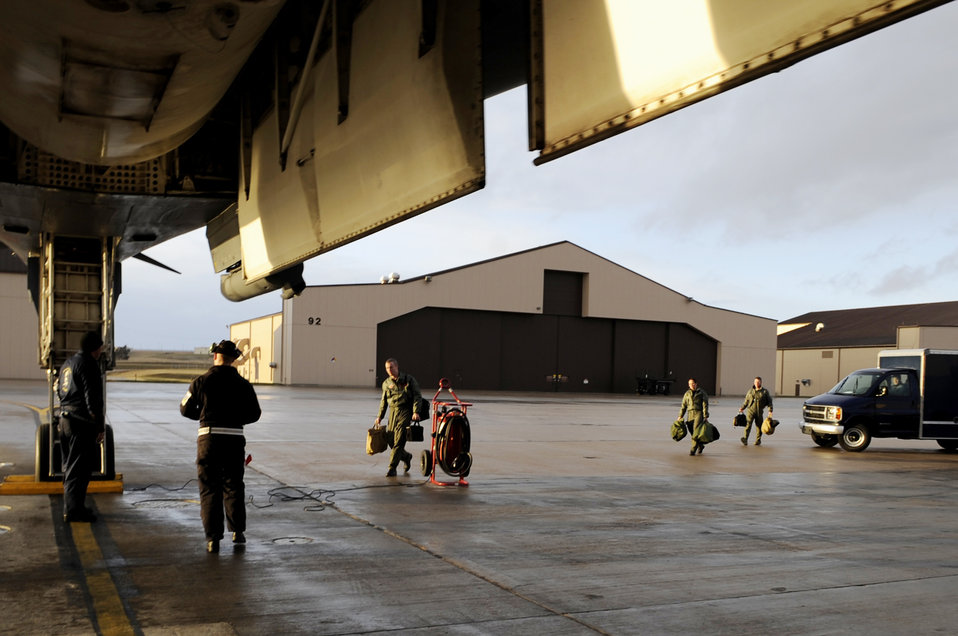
B-1s at Ellsworth

An aircrew arrives at a B-1B Lancer parked on the ramp at Ellsworth Air Force Base, S.D., Oct. 15, 2009, for a training mission. The aircraft is operated by a four person crew which includes the pilot, co-pilot, defensive systems operator and offensive systems operator.